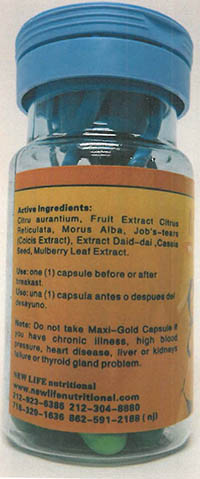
RECALLED – Dietary Supplement

March 25, 2014 – Product Recall – New Life Nutritional Center Issues Voluntary Nationwide Recall of Super Fat Burner, Maxi Gold and Esmeralda Dietary Supplements Due to the Presence of Undeclared Sibutramine and Phenolphthalein.